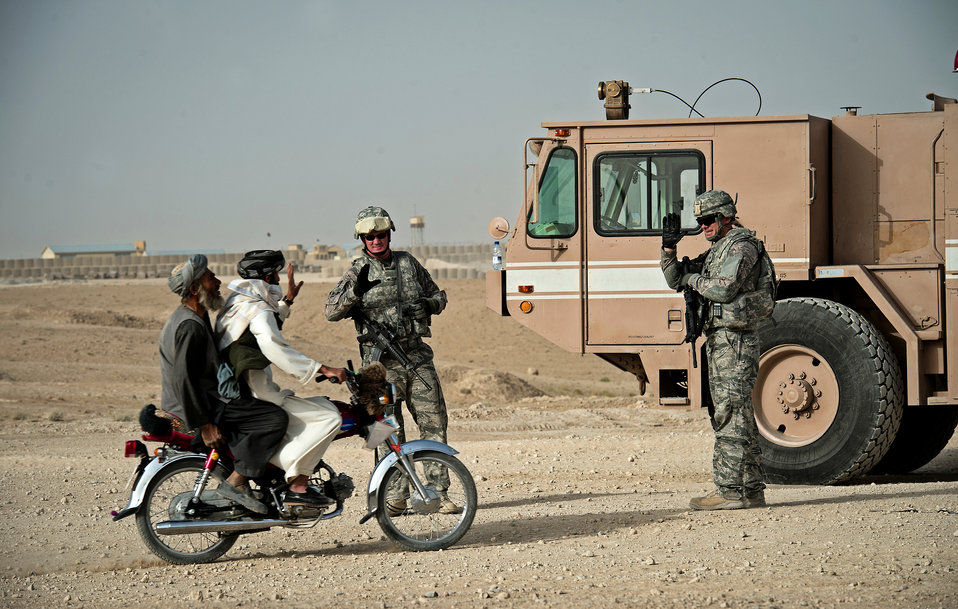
Just saying hi

Tech. Sgt. Gabriel Johnson (left) and Staff Sgt. Aaron Scofield wave at two Afghan men as they ride by their truck, Aug.12, 2011, near Forward Operating Base Apache, Afghanistan. Johnson and Scofield, both of whom are Air Force firefighters, provided crash, fire and rescue support for a C-130 Hercules that delivered the last of the firefighter's P-19 fire engines. The firefighters are part of a team deployed to set up crash, fire and rescue at a bare base.